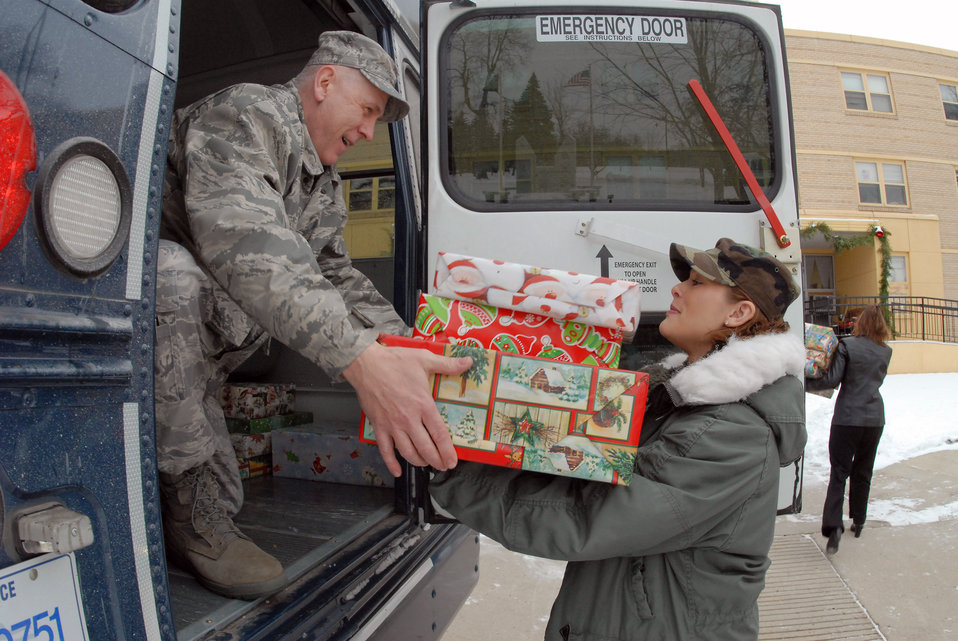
Airmen deliver Christmas

Senior Master Sgt. Paul Tangen hands Christmas gifts to Master Sgt. Merri Jo Filloon as they deliver presents to the North Dakota Veteran's Nursing Home Dec. 10 in Lisbon, N.D. The gifts are given to veterans at the nursing home by the North Dakota Air and Army National Guard each December using funds raised through personal donations given by the North Dakota National Guard members. Sergeant Tangen is the the 119th Wing first sergeant, and Sergeant Filloon is assigned to the 119th Mission Support Flight.